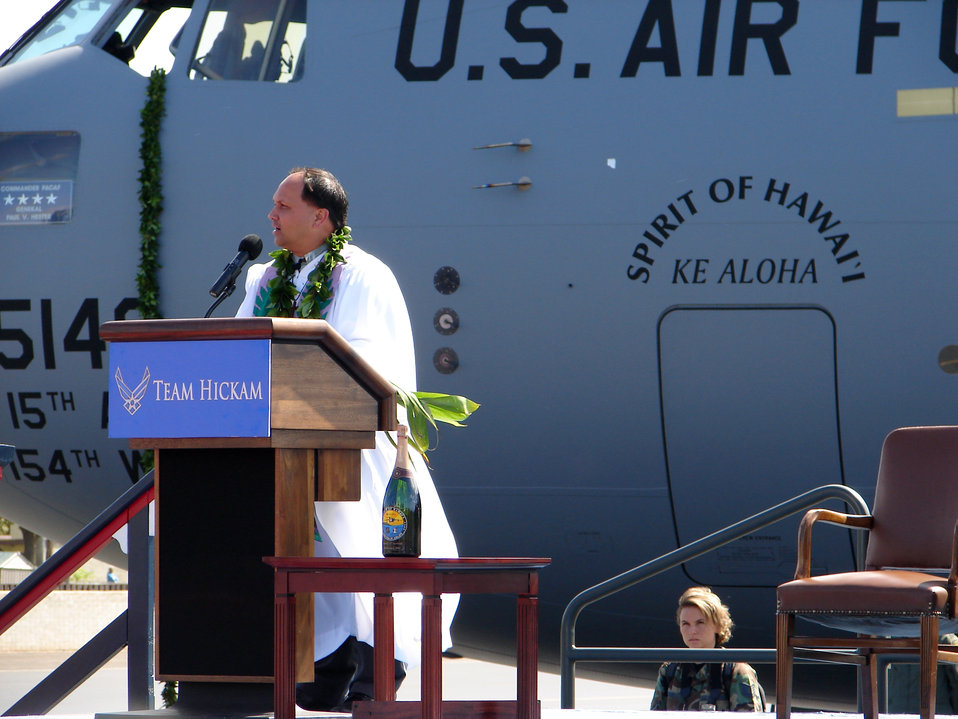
C-17 ceremony

HICKAM AIR FORCE BASE, Hawaii (AFPN) -- The Kahu Kordell Kekoa explains the significance behind the traditional Hawaiian blessing, which he administer to PACAF's new C-17.